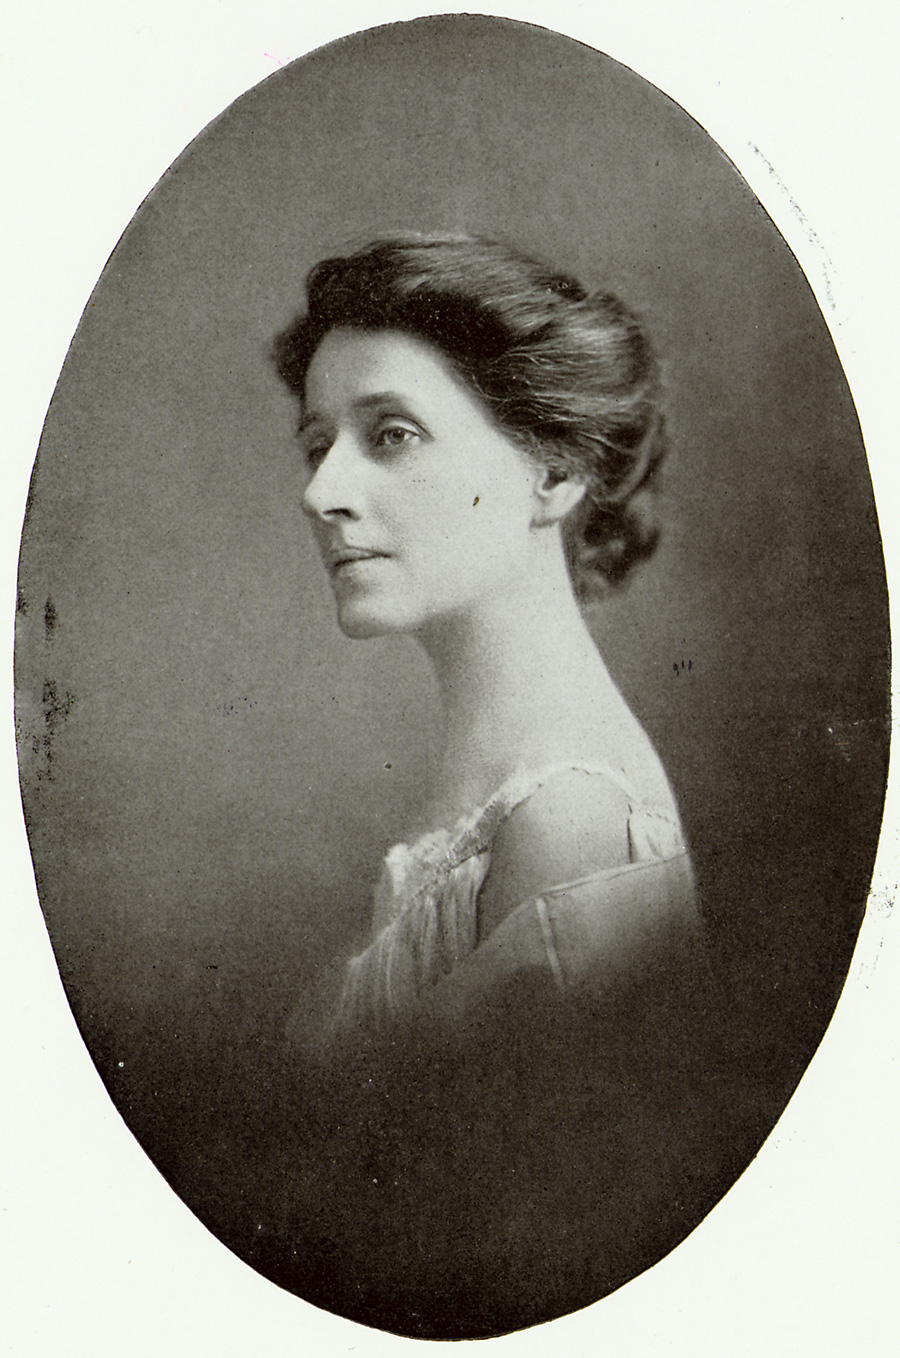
Adelaide Johnson (1846-1955) - Women Artists

Sculptor, Marble portrait monument, Portrait Monument to Lucretia Mott, Elizabeth Cady Stanton, and Susan B. Anthony in the Rotunda of the U.S. Capitol.